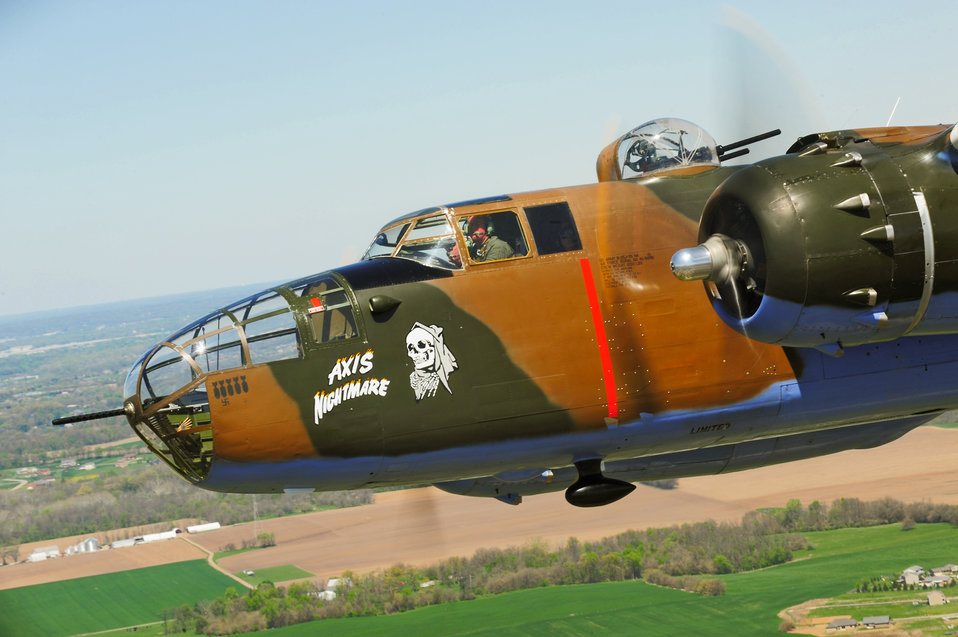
68th Doolittle Raiders Reunion

A vintage B-25 Mitchell bomber flies near the National Museum of the U.S. Air Force at Wright-Patterson Air Force Base, Ohio, during a memorial flight honoring the Doolittle Tokyo Raiders on April 18, 2010. The 68th Doolittle Raiders' reunion commemorates the anniversary of the Doolittle Tokyo Raid. On April 18, 1942, U.S. Army Air Forces Lt. Col. Jimmy Doolittle's squad of 16 B-25 Mitchell aircraft bombed Japanese targets in response to the attack on Pearl Harbor.